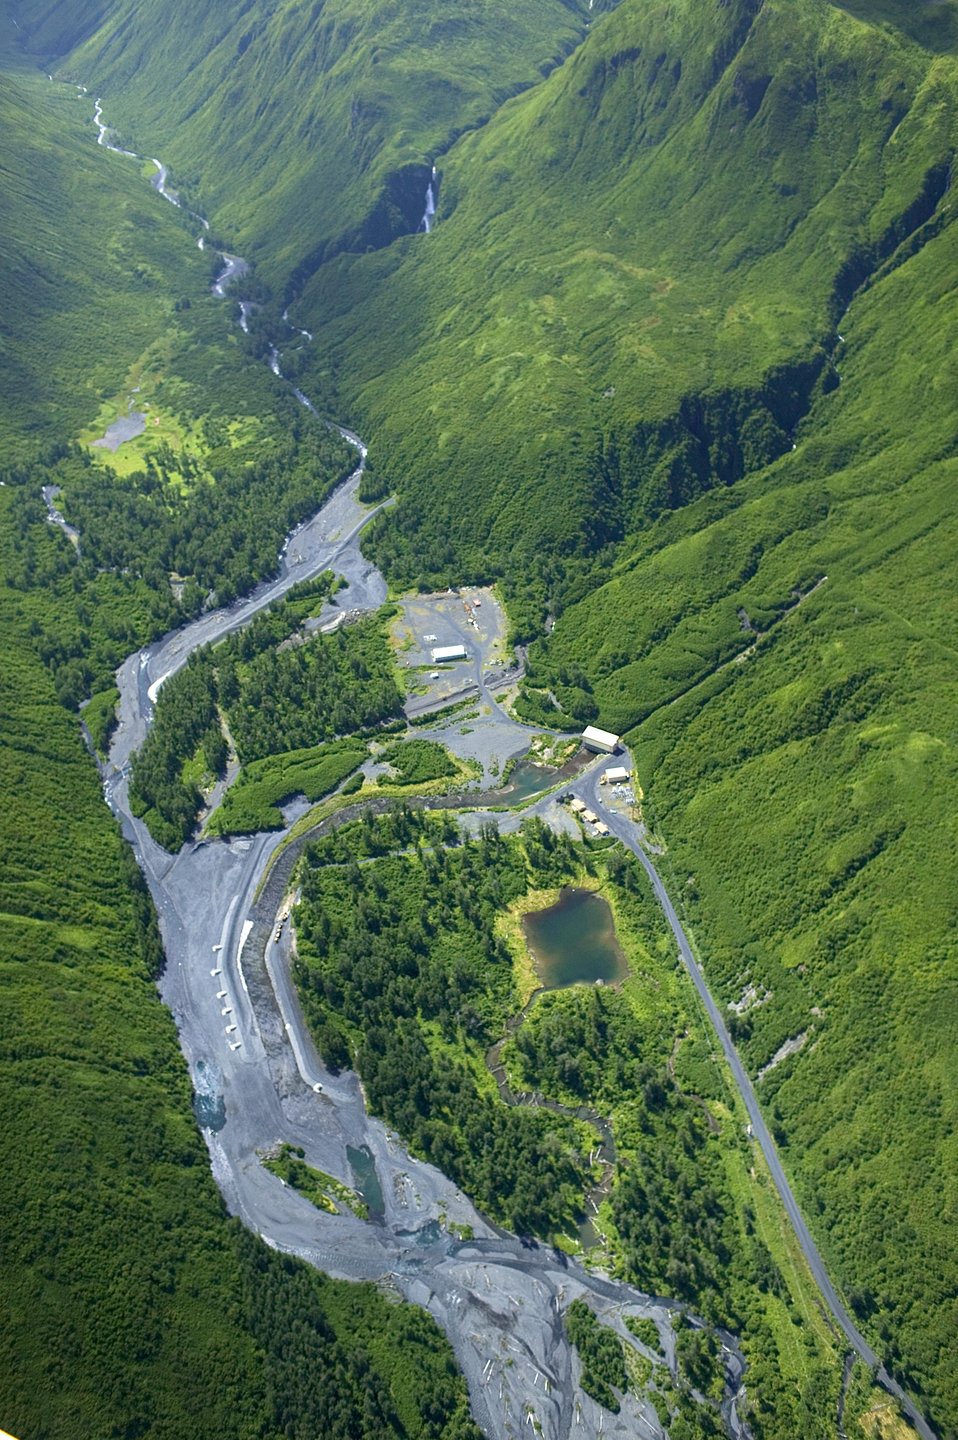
KOD Hildebrand (10)

Kodiak National Wildlife Refuge- Wildlife